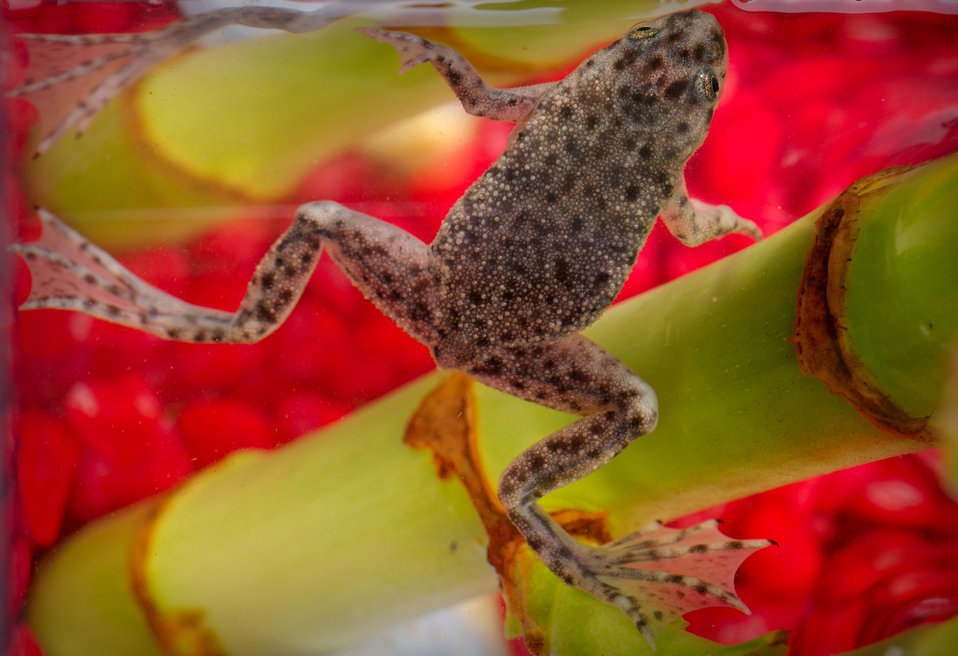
This photograph depicts an African dwarf frog, Hymenochirus boettgeri.